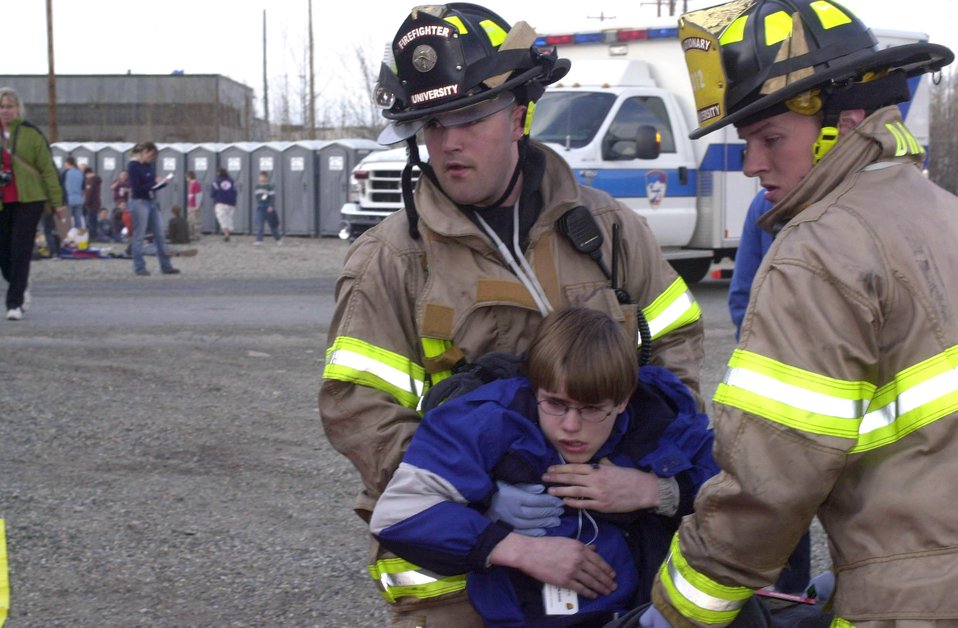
Government, local agencies test emergency coordination

Firemen from the University of Alaska Fairbanks Fire Department carry a simulated accident victim to a triage station May 8 as part of Alaska Shield/Northern Edge 2007. The exercises, which are scheduled to run from May 7-18, test military and civilian authorities throughout Alaska on all aspects of emergency preparedness as they respond to a variety of scenarios ranging from natural disasters to major accidents.